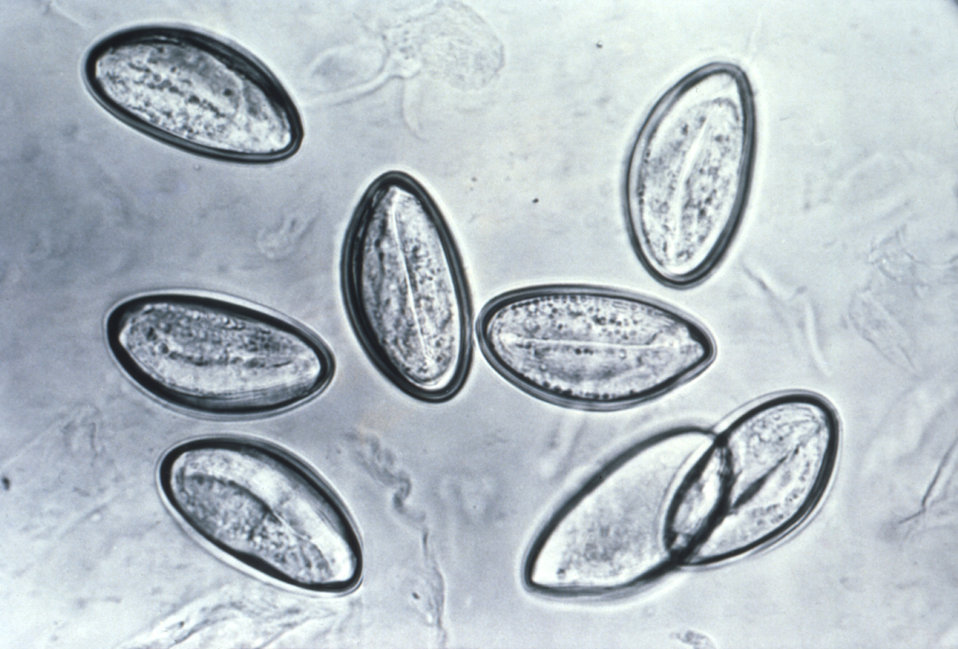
This photomicrograph depicts the eggs of the nematode, or round worm Enterobius vermicularis mounted on cellulose tape.